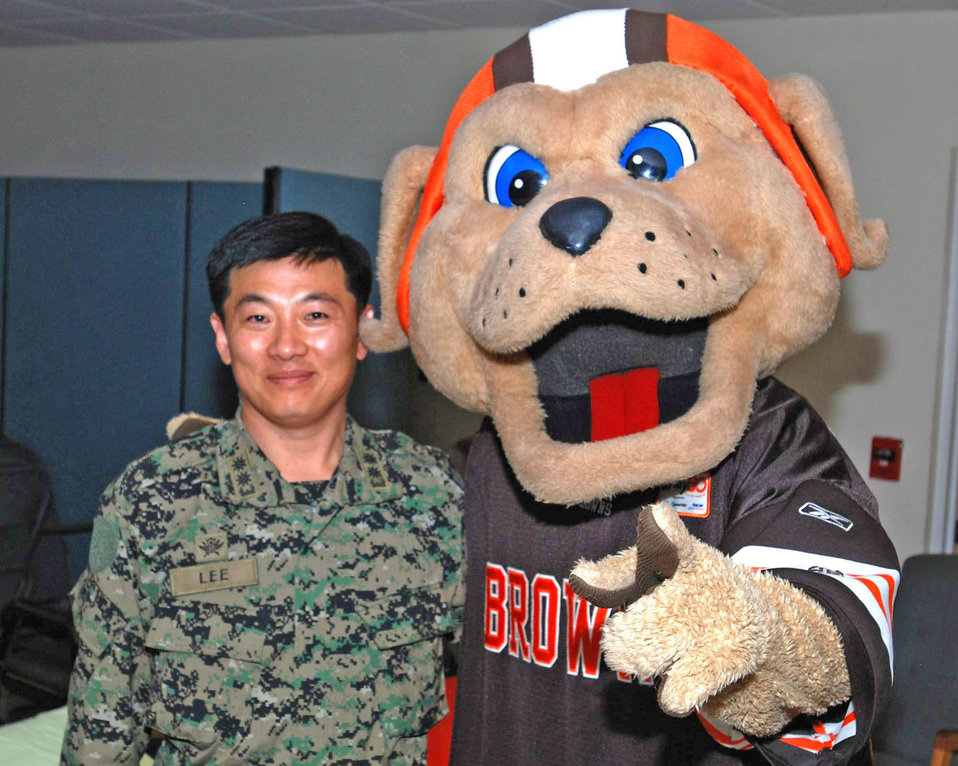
NFL Pro Bowl cheerleaders boost morale for Operation Unified Response workers

The Cleveland Browns' mascot poses with South Korean Army Lt. Col. Chang Lee Jan. 27, 2010, at Homestead Air Reserve Base, Fla. Colonel Chang, South Korea Army liaison officer to the U.S. Strategic Command, is an advance officer for a 250-person element of South Korean engineers who are deploying to Haiti to help reconstruct the island's infrastructure.